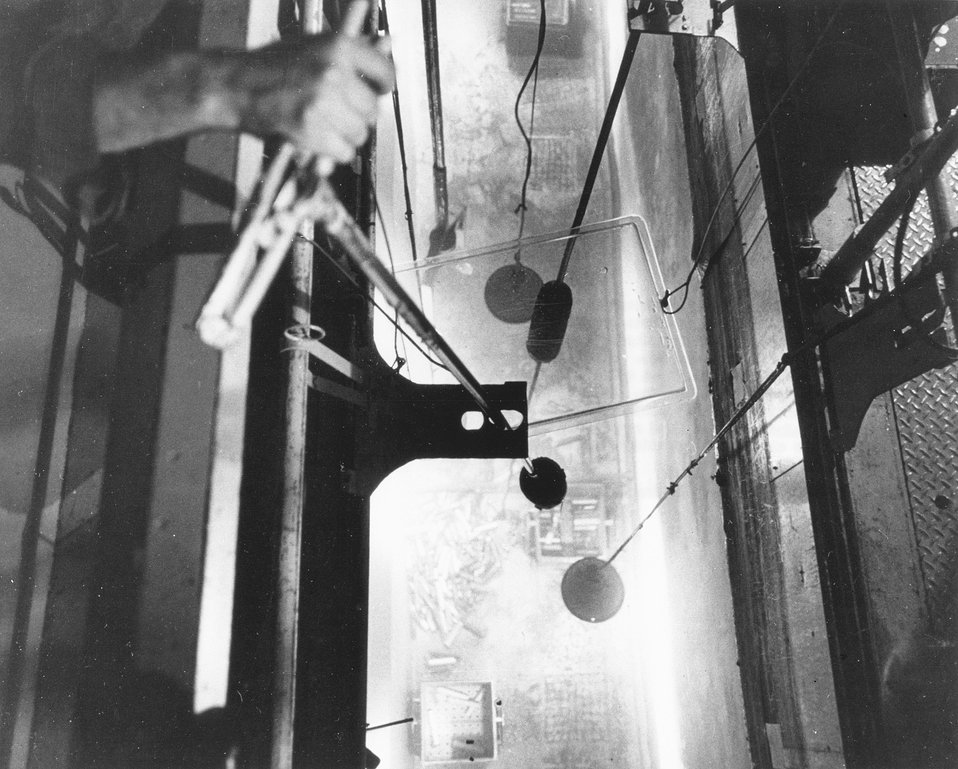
A reactor operator at Hanford's C reactor loads fuel elements into transfer boxes under 20 feet of water following their discharge from the reactor after irradiation. c. 1968